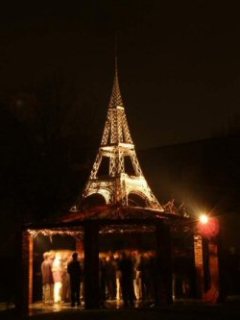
Author: Dewet Burger Source: Personally Photographed